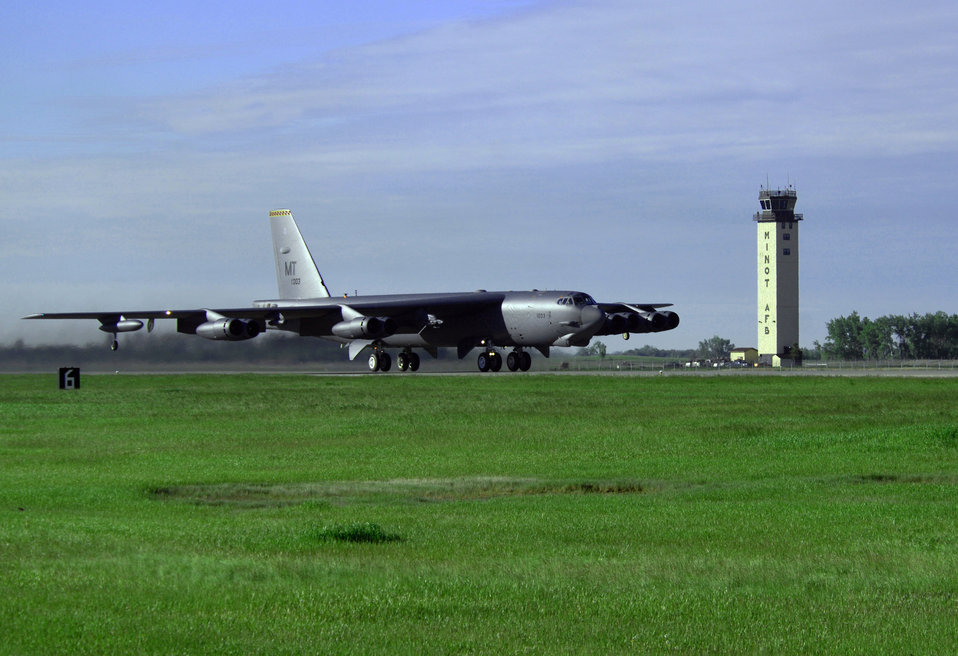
B-52's head to Guam

A B-52H Stratofortess takes off on its way to Andersen Air Force Base, Guam, as part of a deployment June 2, 2010, at Minot Air Force Base, N.D. During the six-month deployment, nearly 350 Airmen and several B-52s will provide U.S. Pacific Command with a continuous bomber presence in the Asia-Pacific region.